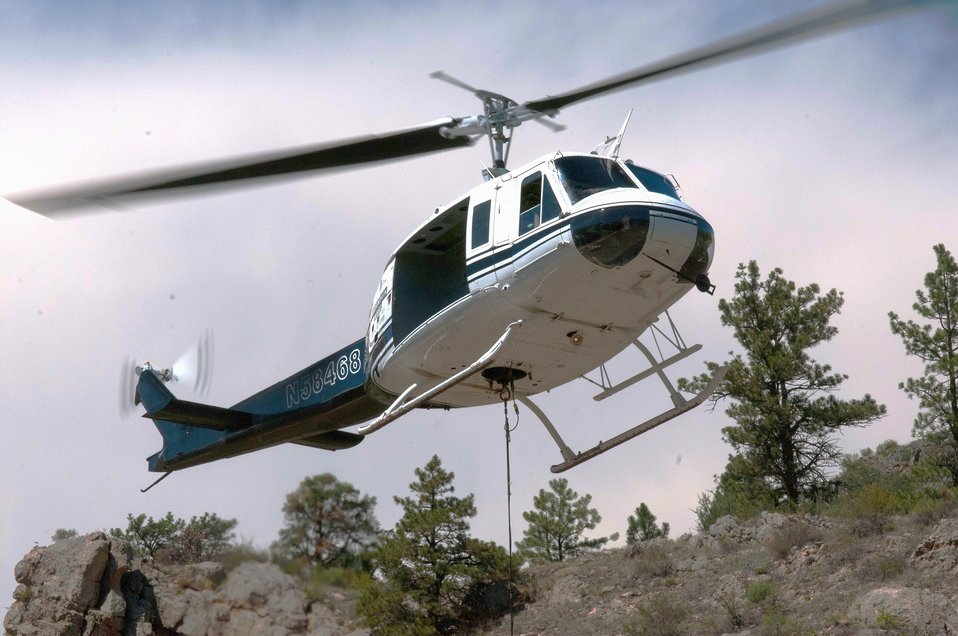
Mountain West Helicopter pilot Randy Mason takes off in a Bell UH-1H (2-blade rotor) after being refueled at the Seaman Reservoir spillway, near Fort Collins, Colo., on Friday, July 20, 2012. In the foreground is an aerial seed spreader, used in the continuing aerial application of straw and seed mix to mitigate soil and ash runoff from the mountainous terrain leading to Seaman Reservoir, drinking water resource for the City of Greeley. The 100-150-foot cable below it holds and releases loads of certified straw weighing 1,400 – 2,000 pounds. Forest service lands received straw, while private and other lands receive a seed mix and straw to promote ground cover plant growth on ash-covered lands. In total, 1,800 tons of straw will be applied during the 14-day operation. One quarter of the cost was paid by the City of Greeley and the U.S. Department of Agriculture funded the remainder. The Hewlett Gulch Fire was started by a camper’s alcohol stove, on May 14, at the saddle of a picturesque mountain ridge along the Hewlett Gulch Trail of Poudre Canyon, in the Roosevelt National Forest, 60 miles north of Denver. At it’s peak more than 400 firefighters were battling fires being pushed by 50 mph winds that helped blacken over 12-square-miles of dry ground cover, brush and trees. Many of the trees were already dead and tinder dry from beetle-kill. Their efforts have successfully kept water in the reservoir clean and clear, while downstream water flow has gone from famous Colorado clear water to nearly black flows of water heavily laden with ash, silt, and burnt debris that recent thunderstorms have already washed down from the mountainsides.